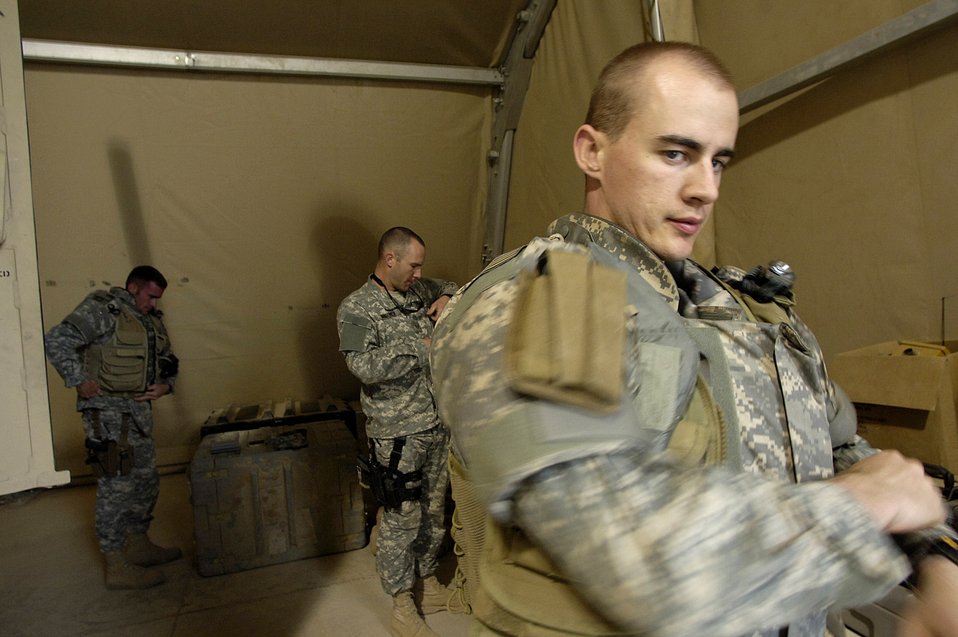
Ordnance disposal makes for no ordinary day

Senior Airman William Newman dons his protective equipment prior to an